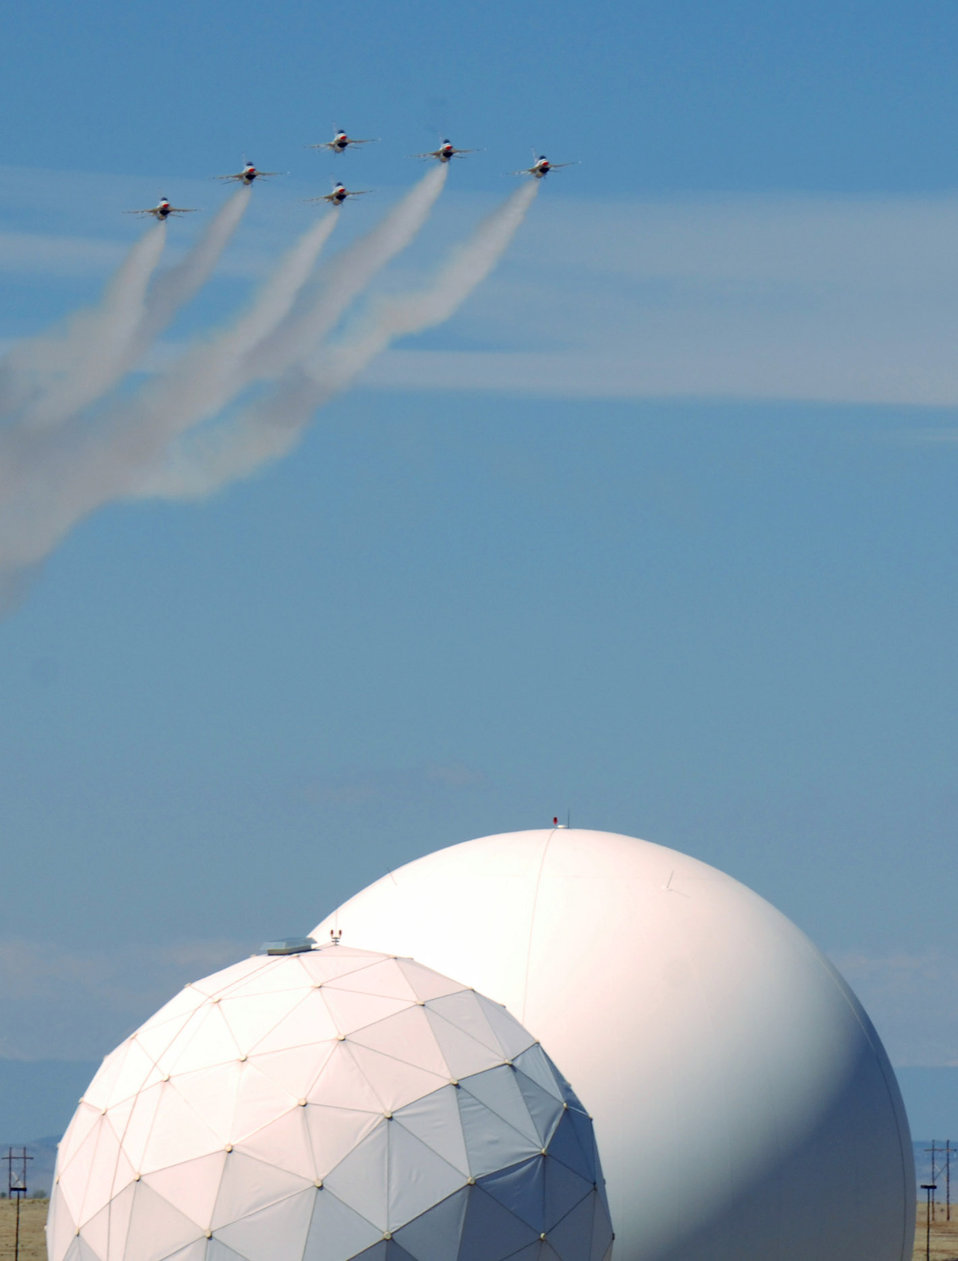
Airpower meets space power

Airpower met space power at Schriever Air Force Base, Colo., as the U.S. Air Force Thunderbirds fly over the base May 25. The Thunderbirds were in nearby Colorado Springs to perform at the Air Force Academy graduation May 28.